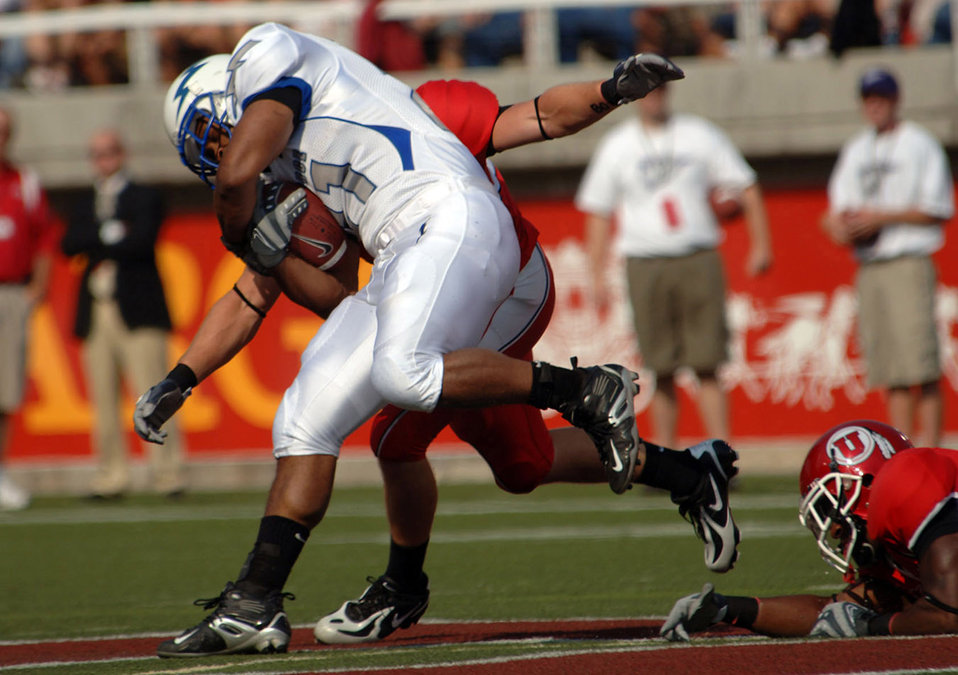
Football: Falcon defense stops Utah, 20-12

U.S. Air Force Academy Falcons senior fullback Ryan Williams charges through Utah defenders Sept. 8 in Salt Lake City. He had 13 carries for 62 yards in Air Force's 20-12 victory at Rice-Eccles Stadium.